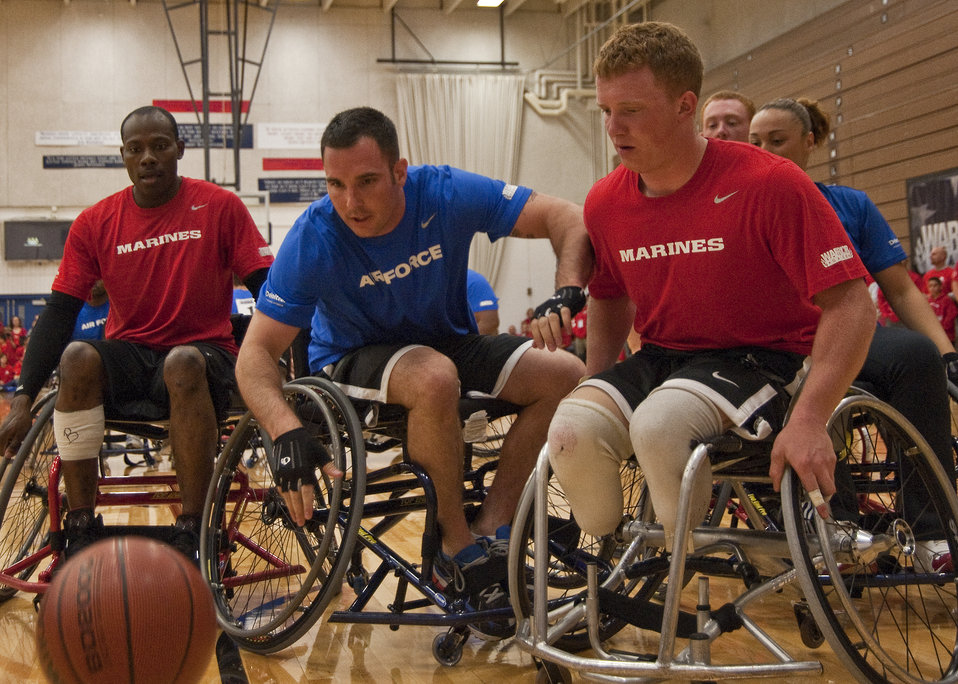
Marine Corps takes down Air Force

Air Force Staff Sgt. Christopher D?Angelo dives for a loose ball during wheelchair basketball at the 2011 Warrior Games in Colorado Springs, Colo. The Air Force lost to the Marine Corps 10 to 46 and will play the Navy for a bronze medal.